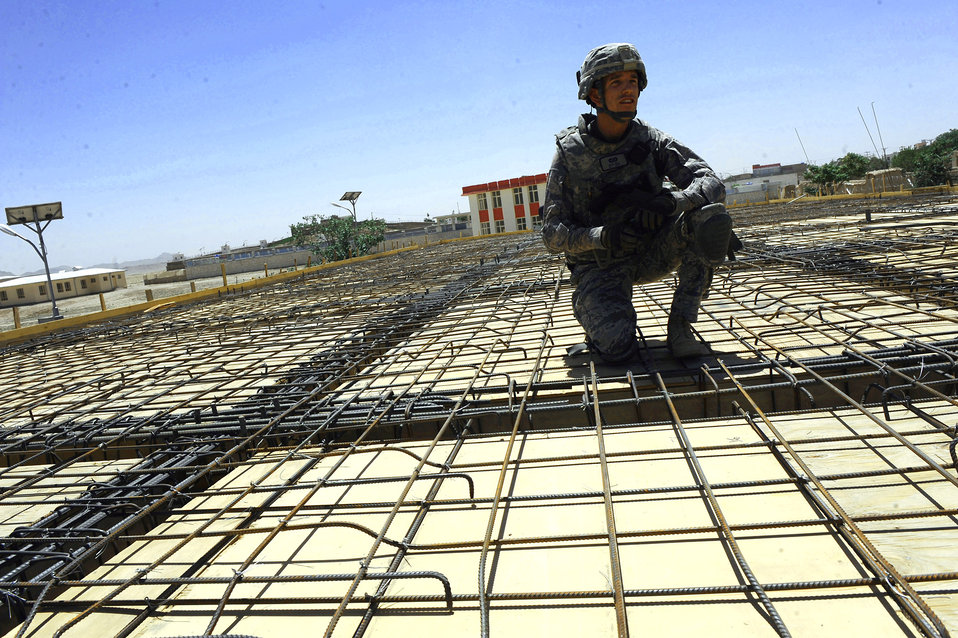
PRT Zabul completes projects for progress

First Lieutenant Keith Yelk checks construction progress of an outpatient clinic at the S.Malakhi Provincial Hospital May 27, 2010, in Qalat City, Afghanistan. Lieutenant Yelk is a civil engineer assigned to Provincial Reconstruction Team Zabul.